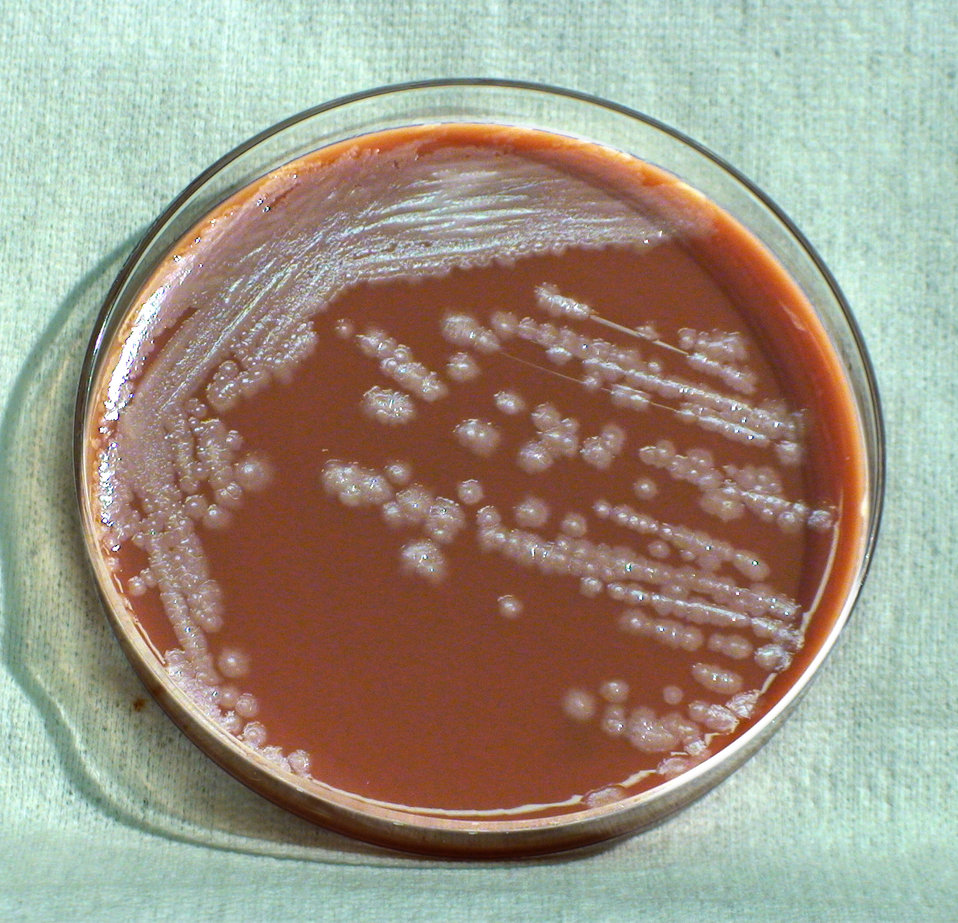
This photograph depicts the colonial morphology displayed by Gram-negative Burkholderia thailandensis bacteria, which was grown on a medium of chocolate agar, for a 48 hour time period, at a temperature of 37�C. See PHIL 12404 for a closer view of these bacterial colonies. See both PHIL 12417 and 12418, for a view of this bacterial specie, grown on the same medium, at the same temperature, however, for a lesser amount of time (24hrs), and note PHIL 12425 and 12426, which depict the B. thailandensis colonial growth, again on the same medium, but at a higher temperature (42�C), and half the cultivation time (24hrs).